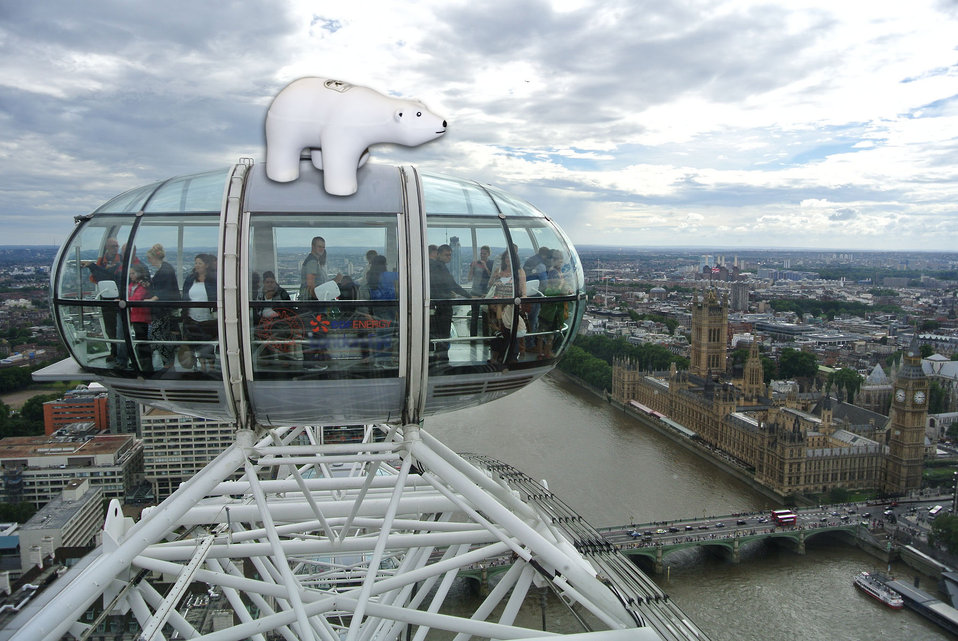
London, England

What a view! This enormous structure is the largest of its kind in Europe and provides a breathtaking vista of this city’s many sites. Any idea where our polar bear has landed?

Answer: The London Eye in London England

Originally photo taken by Paul David Levin (CC BY 2.0), London, England, 2012.